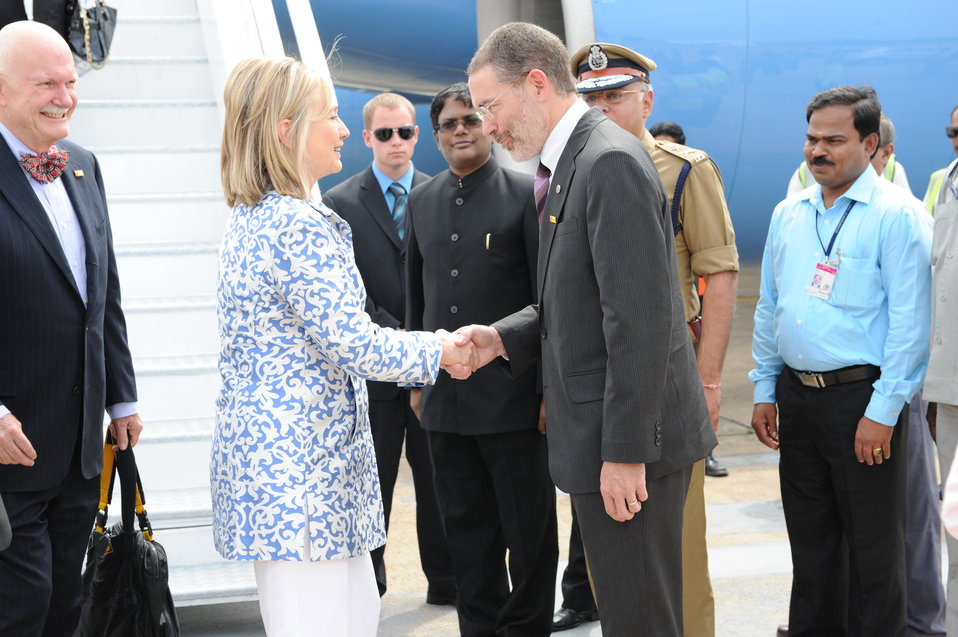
Secretary Clinton Shakes Hands With Consul General Simkin

U.S. Secretary of State Hillary Rodham Clinton shakes hands with U.S. Consul General Andrew Simkin at Chennai airport in Chennai, India, on July 20, 2011. Ambassador Peter Burleigh, Charge d'Affaires of the U.S. Mission in India, left, and others look on. [Paul Cohn/ State Department photo]